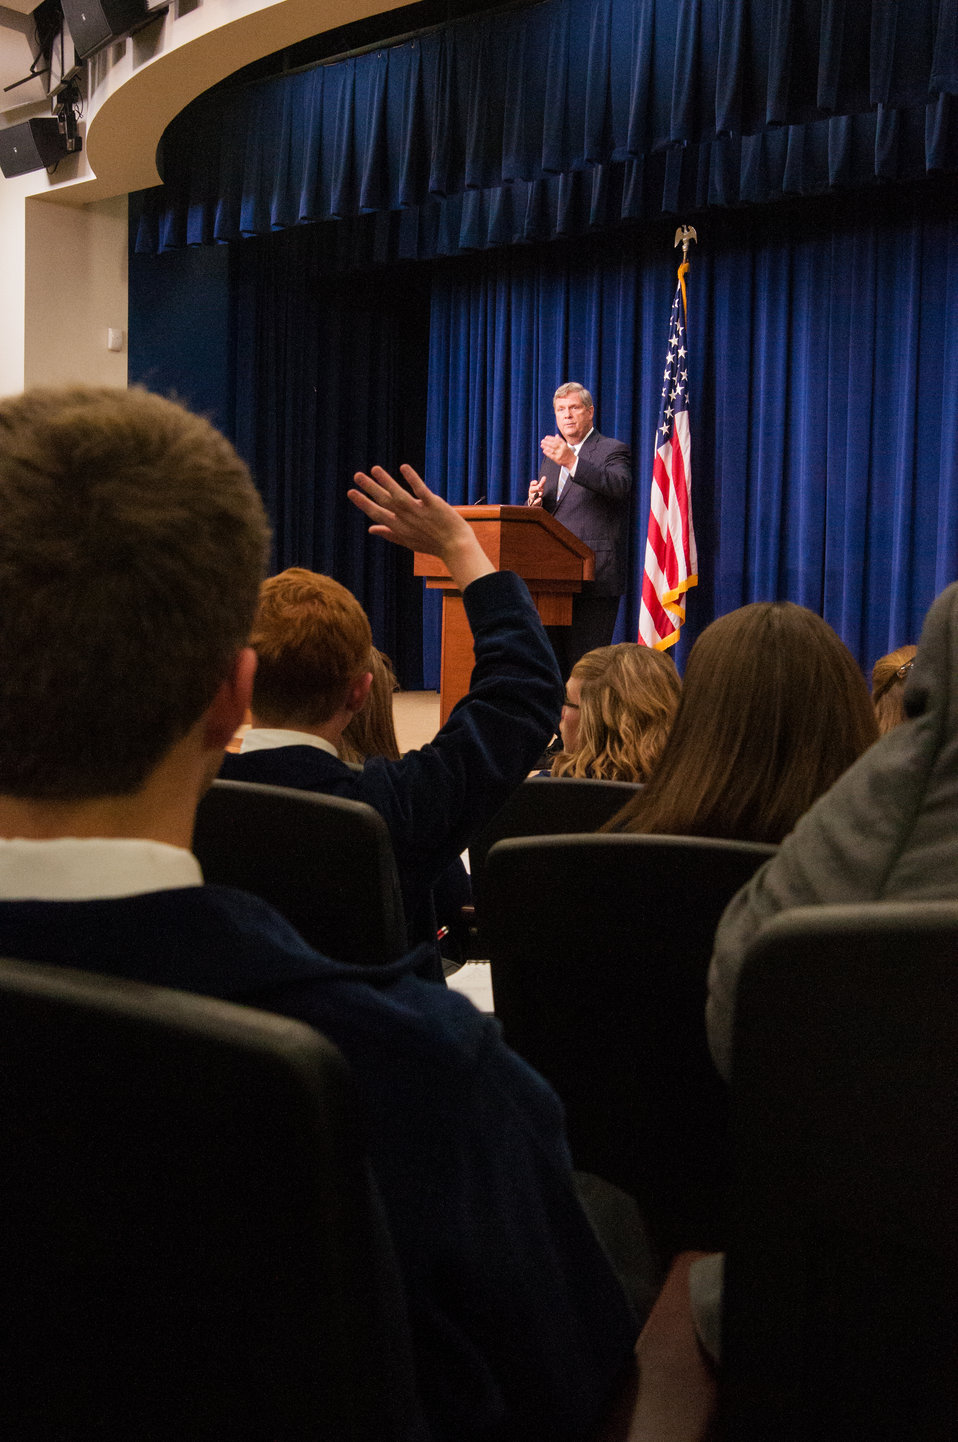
Agriculture Secretary Tom Vilsack speaks at a meeting of the White House Rural Council to an audience of the National State President’s Conference of the FFA on Wednesday, Jul. 24, 2013 in Washington, D.C. Secretary Vilsack took questions from the audience and discussed international, national and agricultural production topics with the FFA State President’s.